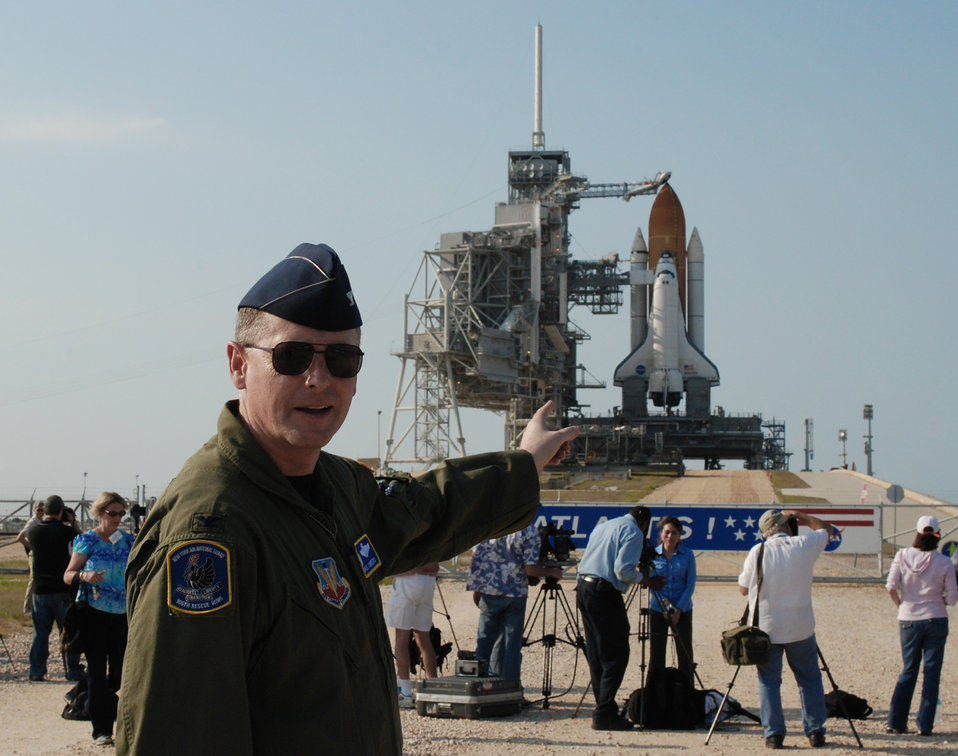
New York Air Guard supports shuttle for 100th time

Col. Michael Canders explains how NASA astronauts would bail out of Space Shuttle Atlantis May 10 at Kennedy Space Center, Fla. The shuttle launched successfully May 11.